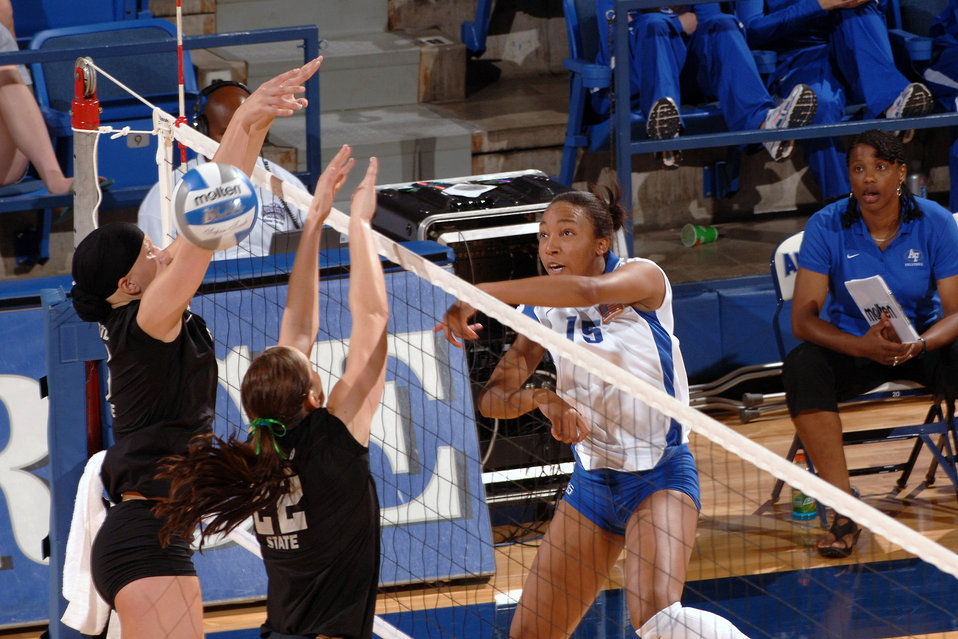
Cadets place second at volleyball invitational

U.S. Air Force Academy Cadet 2nd Class Jasamine Pettie spikes a ball during the Air Force Invitational held Aug. 24 at the Academy in Colorado. The Lady Falcons finished second in the tournament.